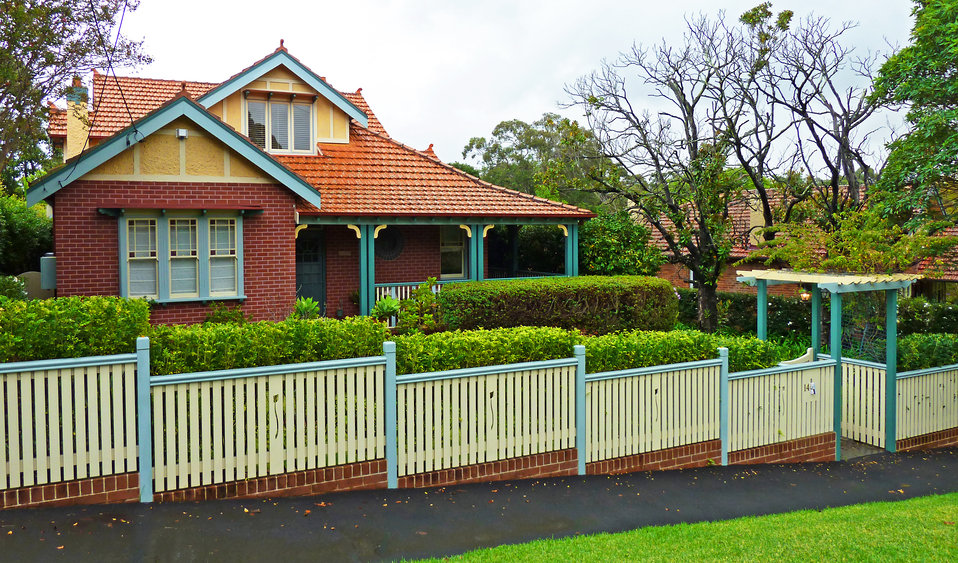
14 Kelburn Road, Roseville, New South Wales, Australia.